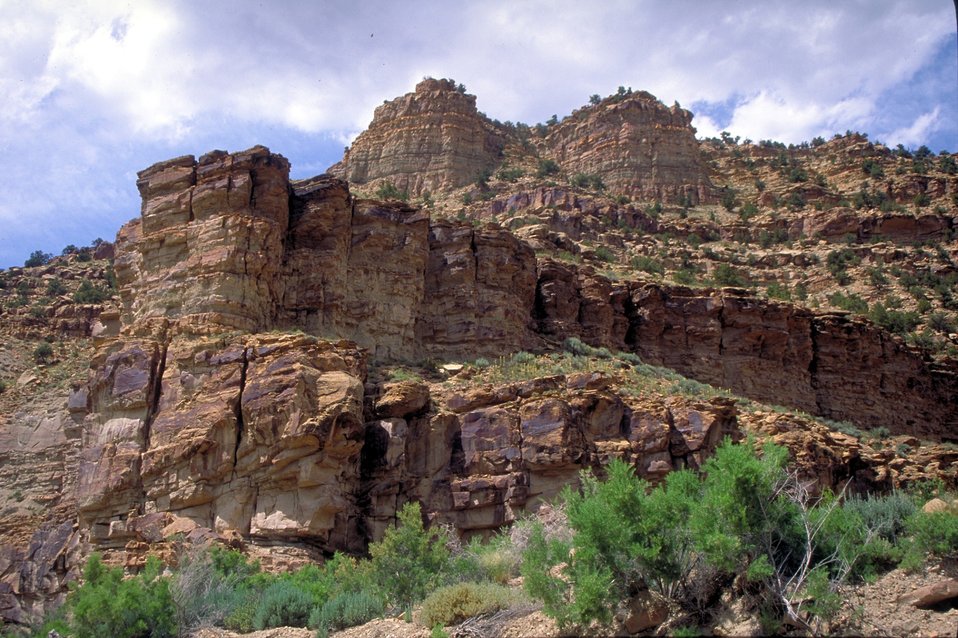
Nine-Mile Canyon near Price, Utah.